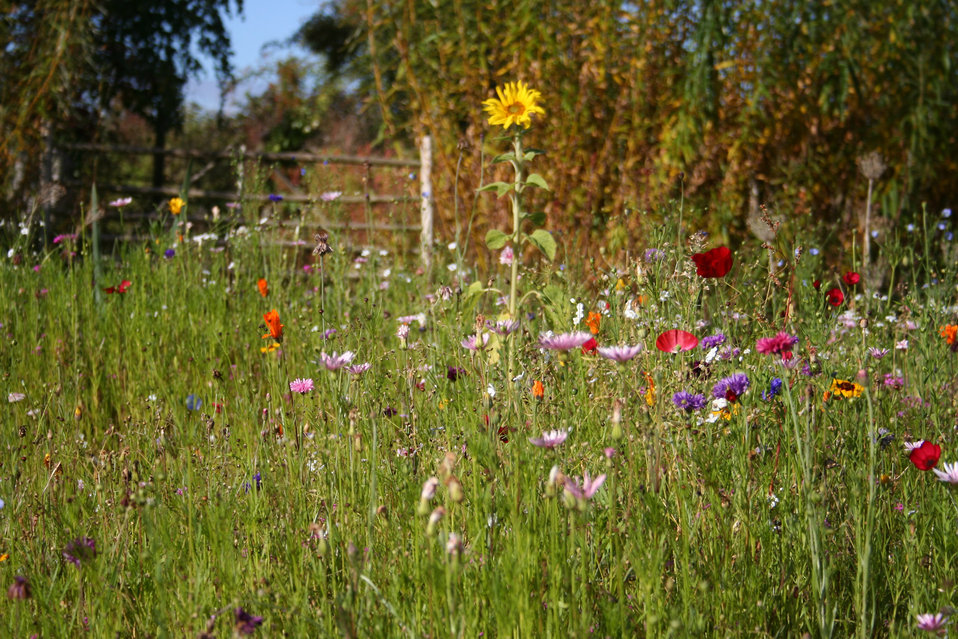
Flowers

Autumn flowers.